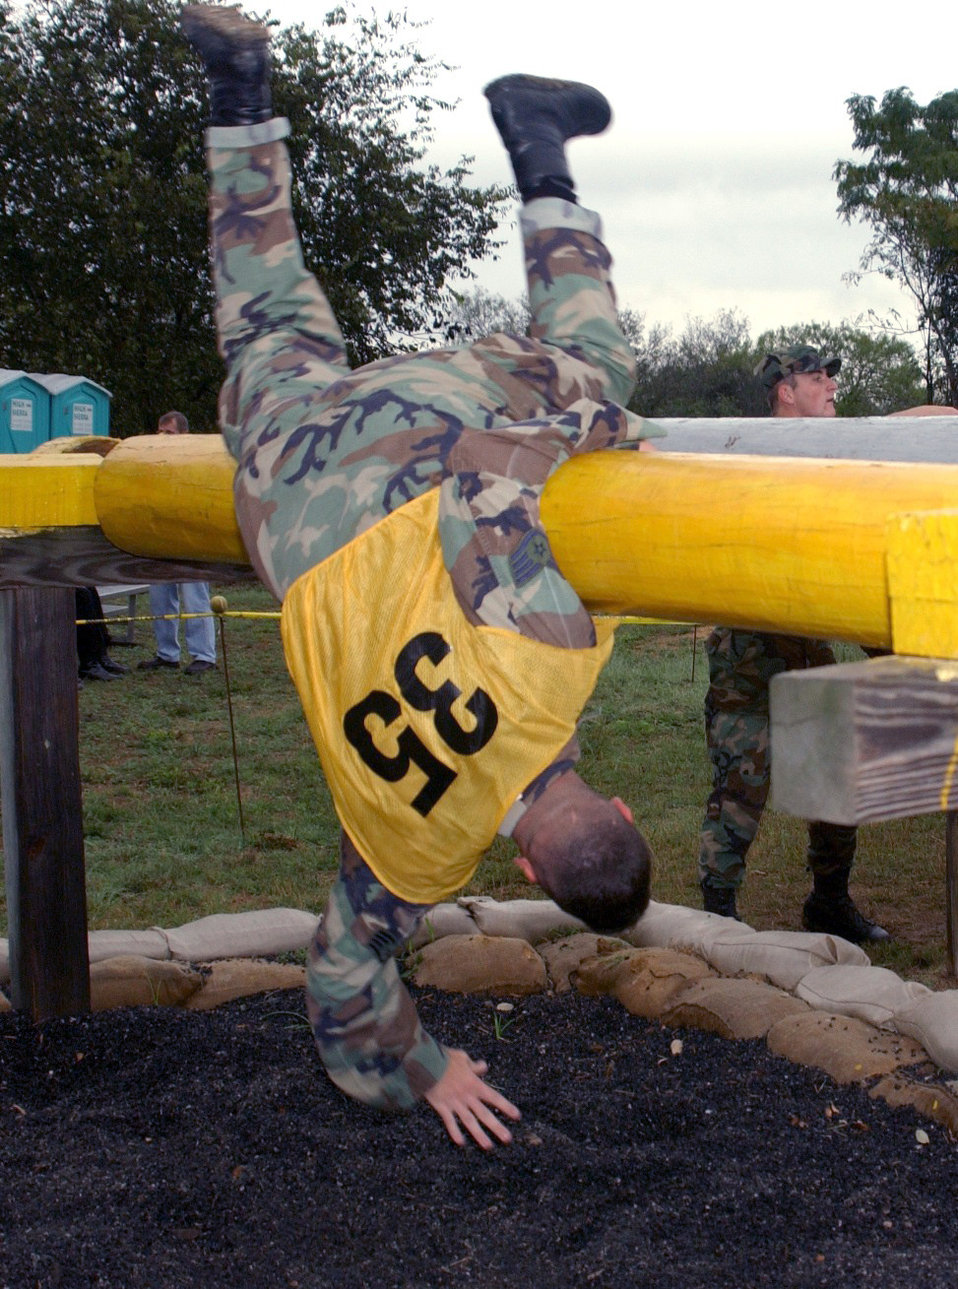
Up and over

LACKLAND AIR FORCE BASE, Texas -- Staff Sgt. Joseph Sedia finishes the log roll obstacle during the fitness challenge event at Defender Challenge 2004. Sergeant Sedia, from the 436th Security Forces Squadron at Dover Air Force Base, Del., is on the Air Mobility Command team. The annual Defender Challenge here pits security forces teams from Air Force major commands, the Royal Air Force Regiment and the Department of Energy against each other in events that test marksmanship, tactics, physical fitness and teamwork. This year's competition runs Oct. 23 to 28.